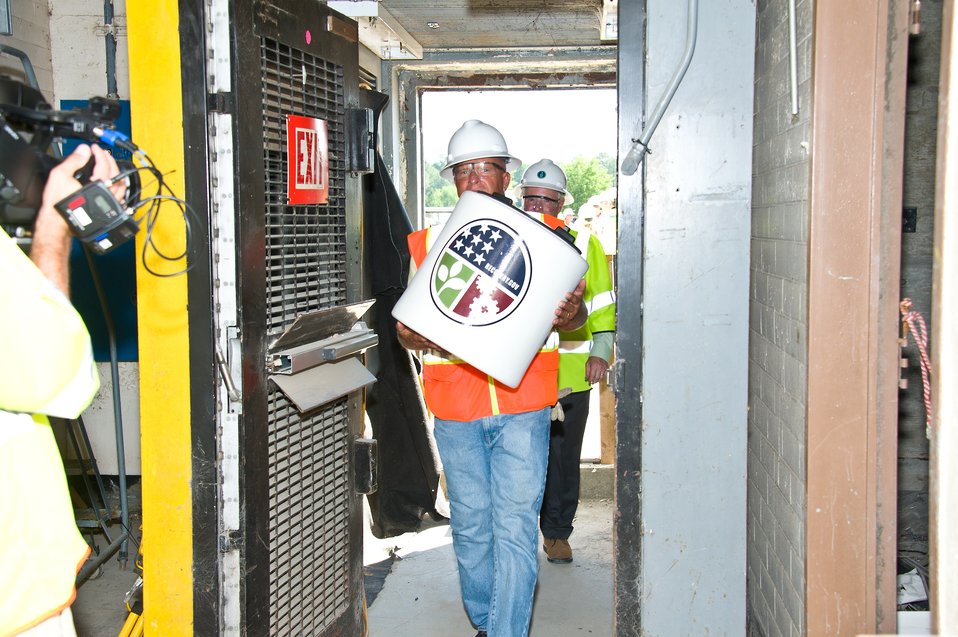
Recovery Act Workers Add Time Capsule Before Sealing Reactor for Hundreds of Years

SRS employee Marc Sharpe, who was a senior reactor operator at P Reactor in the mid-1980s, carries a time capsule containing items on SRS and national events into P Reactor. Dr. David Moody, manager, DOE Savannah River, walks behind Sharpe.

The former nuclear reactor is sealed to allow radioactivity to naturally decay.